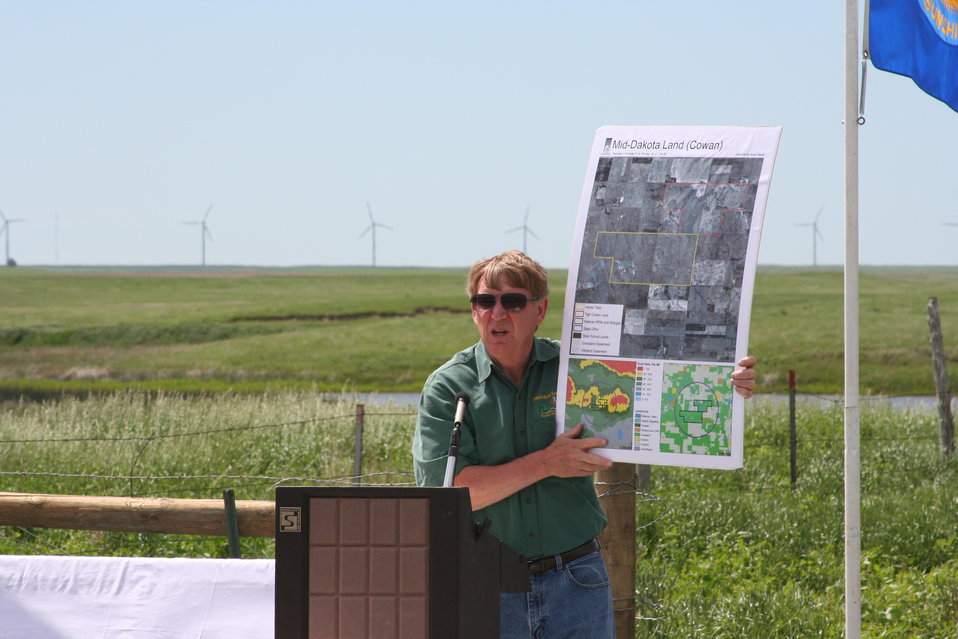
2013 Green Wing Dedication 024

Cowan/Harter WPA Green Wing Dedication